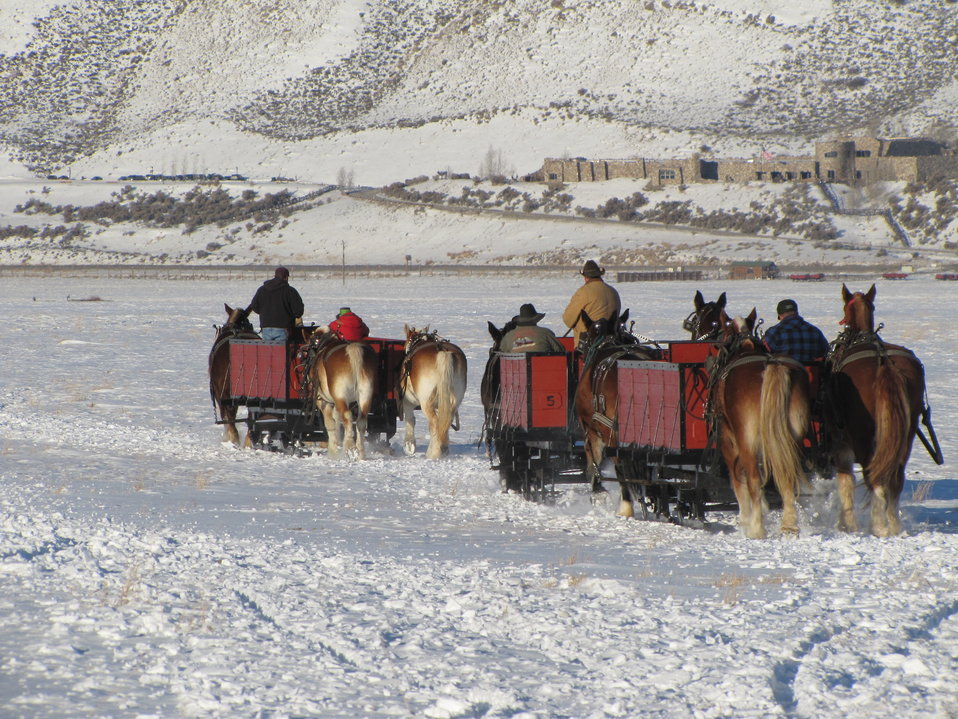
Leaving the Barns

After they're harnessed, the horses are driven across the refuge from the barn area to the sleigh boarding area. While some horses pull sleighs on the trek over, others follow along behind.